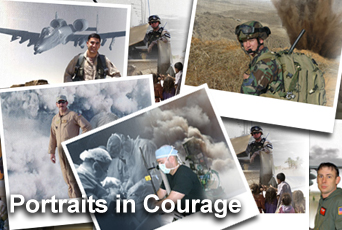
Airmen's heroic actions highlighted on 'Portraits in Courage'

Courageous actions of 15 Airmen are highlighted in the inaugural edition of the Chief of Staff's Portraits in Courage. The vignettes are available on Air Force Link under the Portraits in Courage area. The stories are also compiled in a soft-cover book being distributed in limited numbers to the major commands.